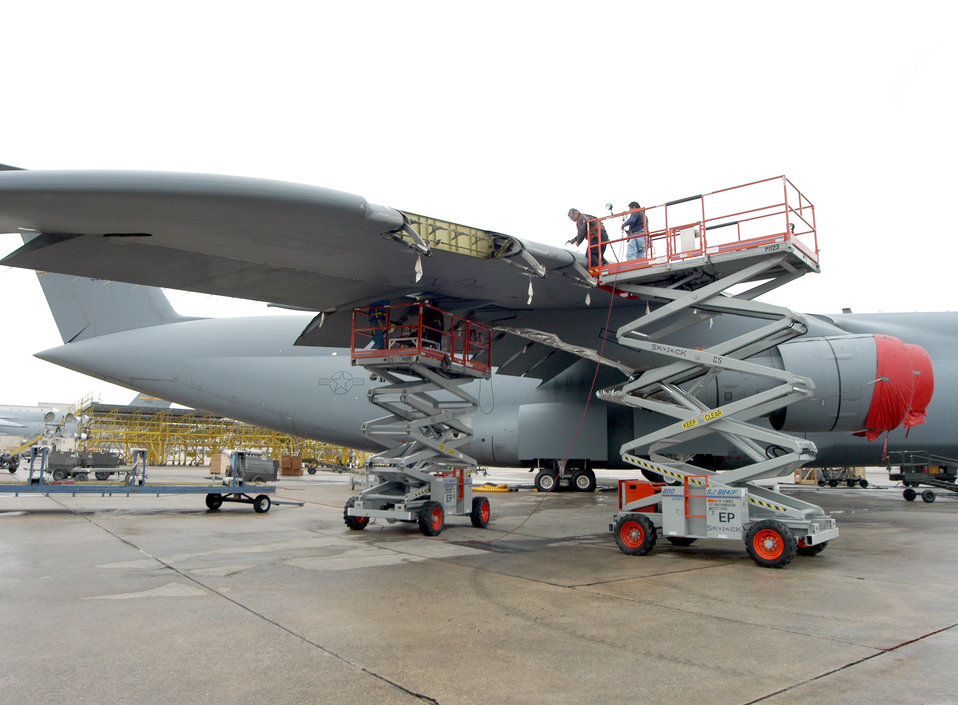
Back to duty

ROBINS AIR FORCE BASE, Ga. -- The C-5 Galaxy that was hit by a missile shortly after takeoff in Iraq on Jan. 8 receives permanent repairs here. The aircraft was returned to Air Mobility Command on Feb. 23.